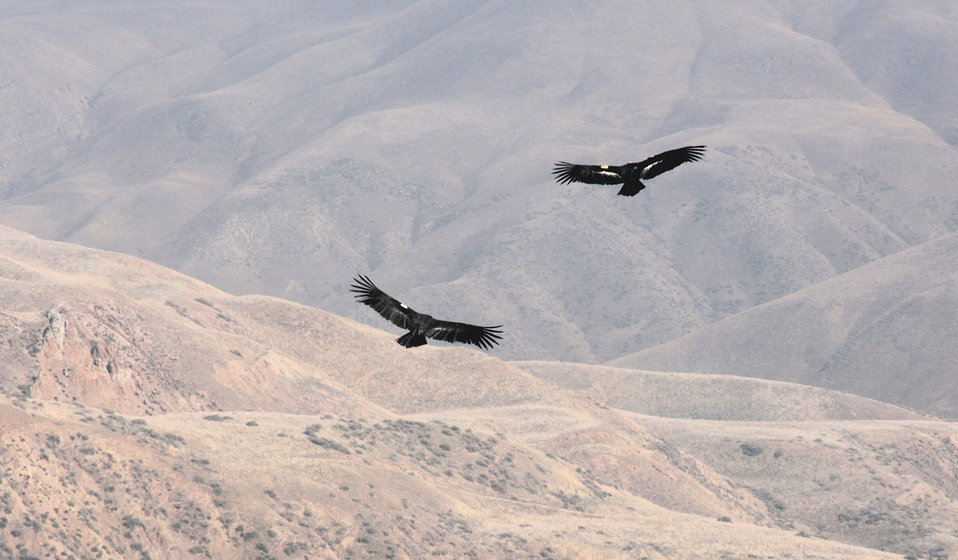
California condor pair in flight

Bitter Creek National Wildlife Refuge, CA